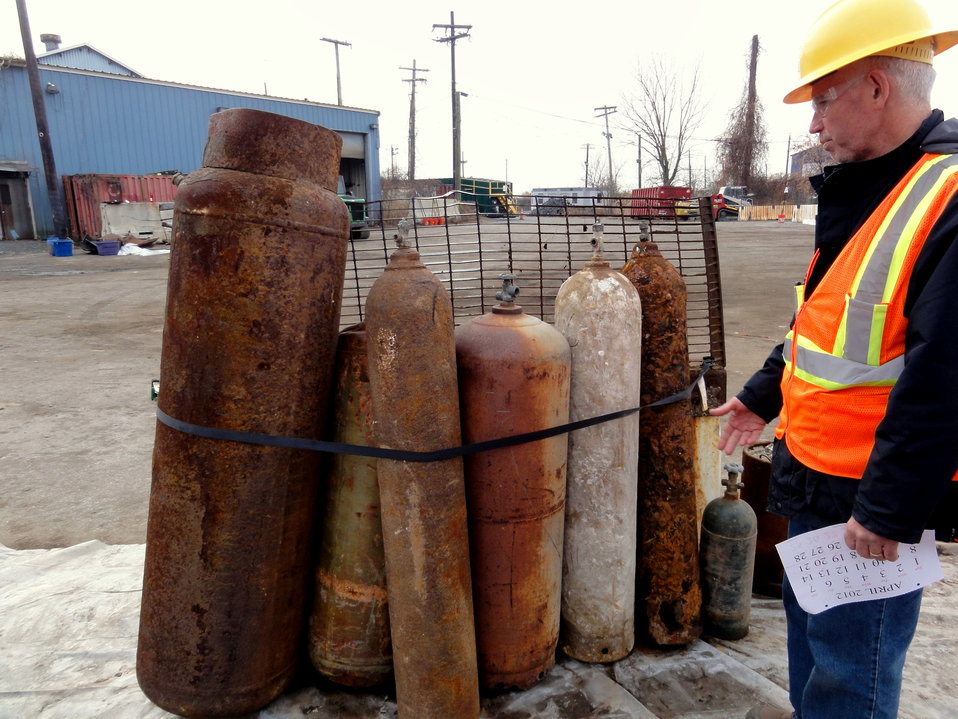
December 2, 2012 - EPA On-Scene Coordinator Michael Ferriola points out 'mystery tanks' at the Fresh Kills, Staten Island Collection Area

These tanks were picked up during hazardous material removal operations across Staten Island, NY. Each tank requires careful testing to ensure proper disposal.